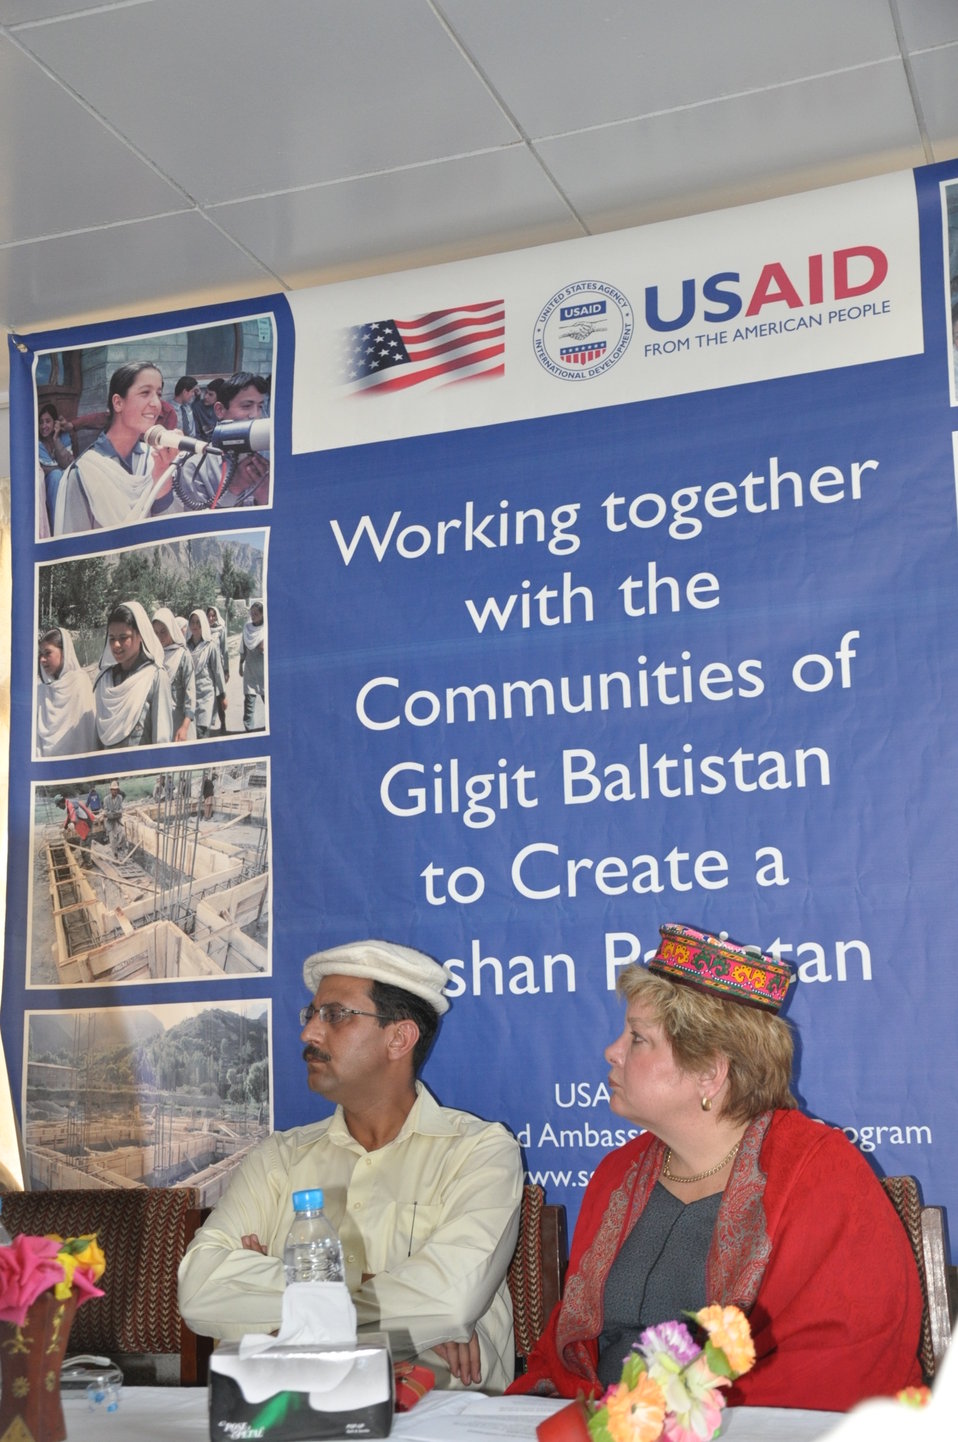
Deputy Director Karen Freeman (USAID) and Deputy Chief of Party Mazhar Iqbal NRSP - at Girls Hostel, Gulmit.

In Gulmit, Deputy Mission Director Karen Freeman visited with students, parents, and teachers who are benefitting from the construction of a hostel for female students in a disaster-hit area of Hunza. At least 40 female students will stay in the hostel every year. Freeman toured the school and met with students, where she emphasized that the United States government is committed to not only helping communities rebuild after disasters like the 2010 floods, but also to improving access to quality education and teachers.